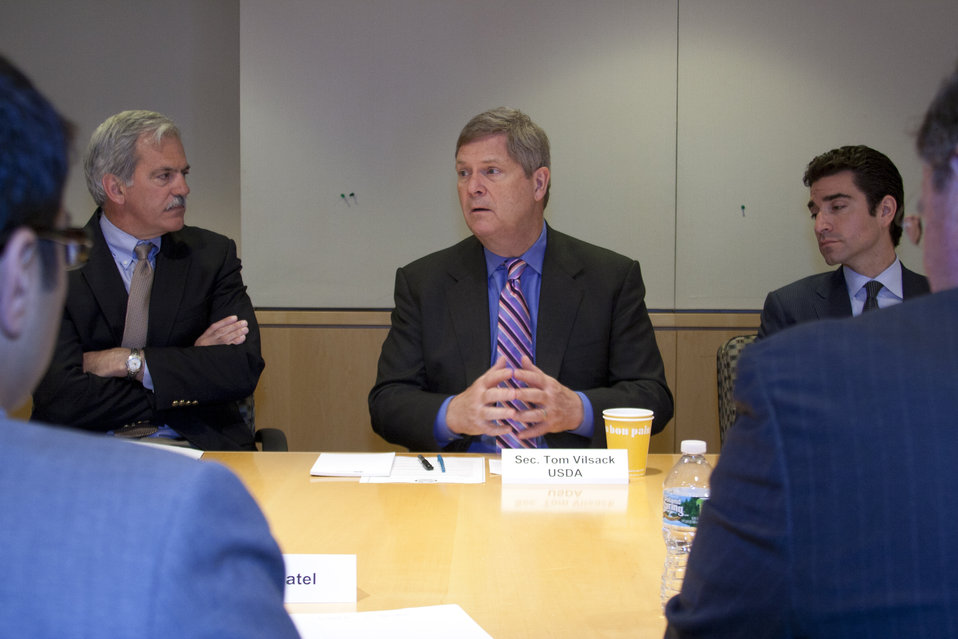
Agriculture Secretary Tom Vilsack held a roundtable meeting at Harvard University in Boston, MA, on Friday, May13, 2011.